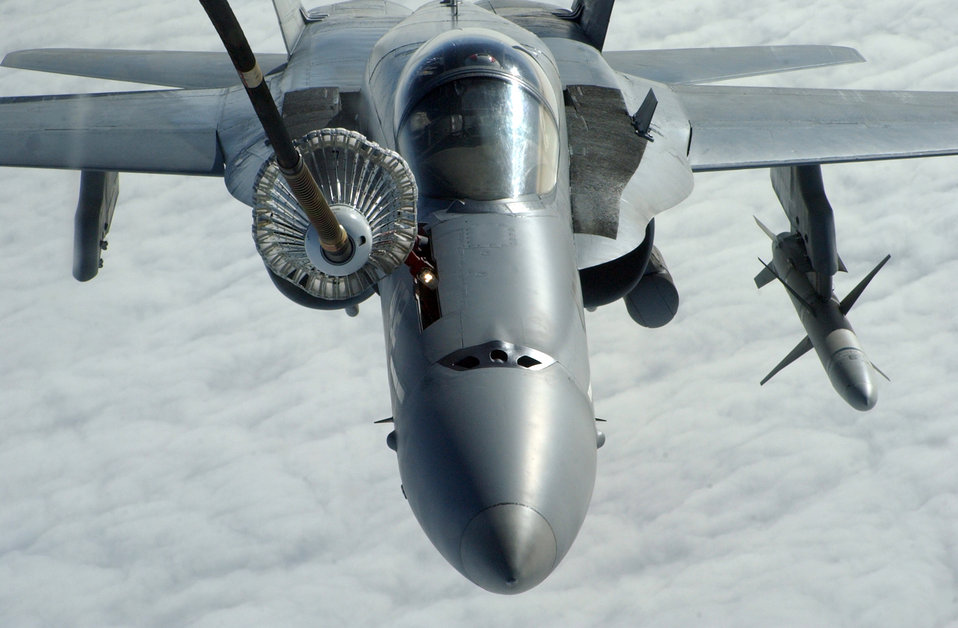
KC-10 Extenders keep jets on target

A Navy F/A-18 Hornet receives fuel from a KC-10 Extender's trailing drogue during Red Flag-Alaska 07-1 April 11. Red Flag-Alaska is a Pacific Air Forces-directed field training exercise for U.S. forces flown under simulated air combat conditions. It is conducted on the Pacific Alaskan Range Complex with air operations flown out of Eielson and Elmendorf Air Force Bases. .